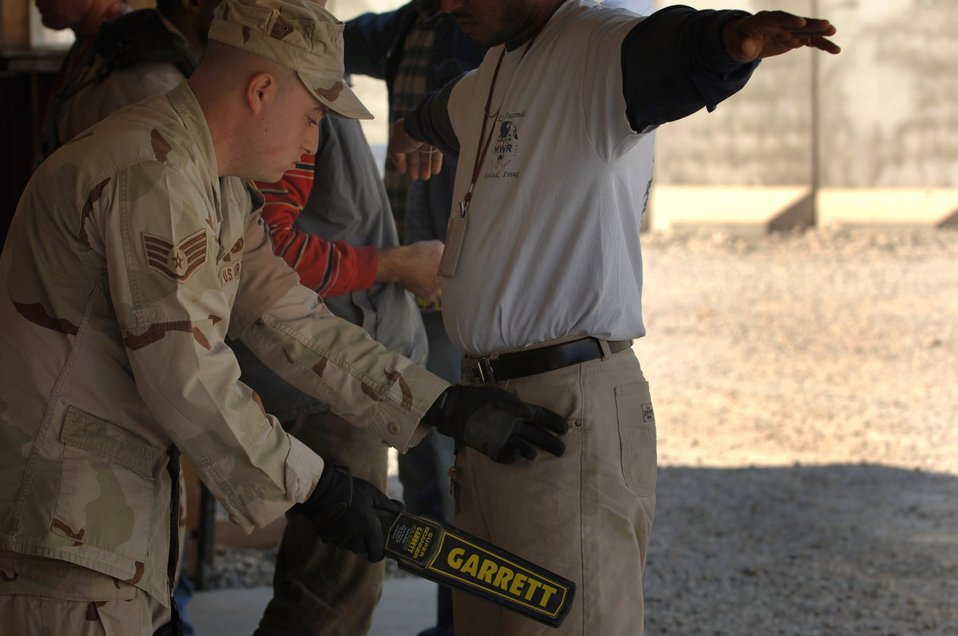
Security forces Airmen protect Iraq's combat airpower hub

Staff Sgt. Carmine Androsiglio uses a metal detector to check a third-country national contractor for illegal items such as cameras and weapons Feb. 21 at Balad Air Base, Iraq. Sergeant Androsiglio is assigned to the 332nd Expeditionary Security Forces Squadron.